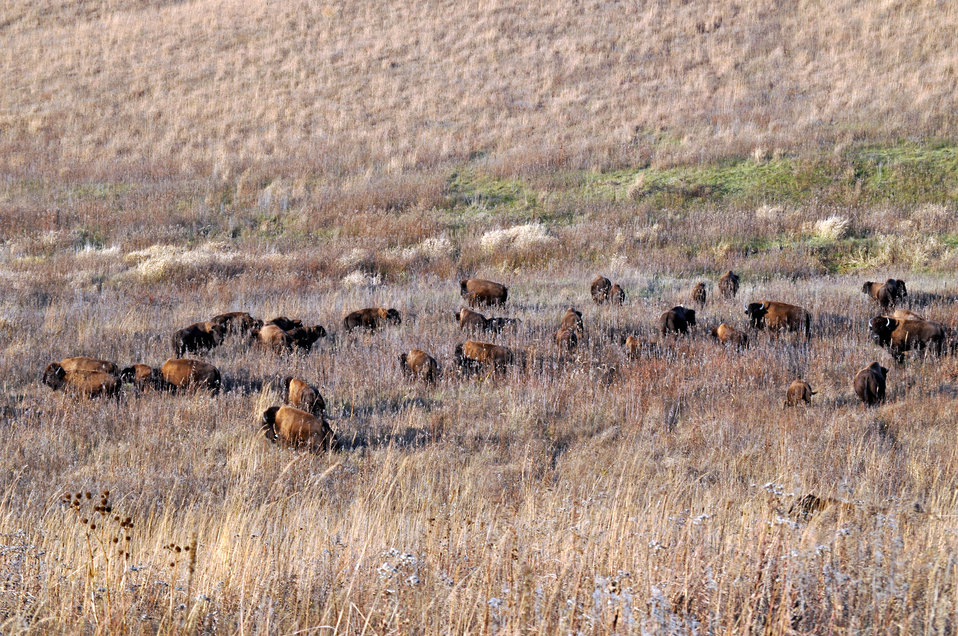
Bison at Dunn Ranch, an a prairie restored by The Nature Conservancy in northwest Missouri.